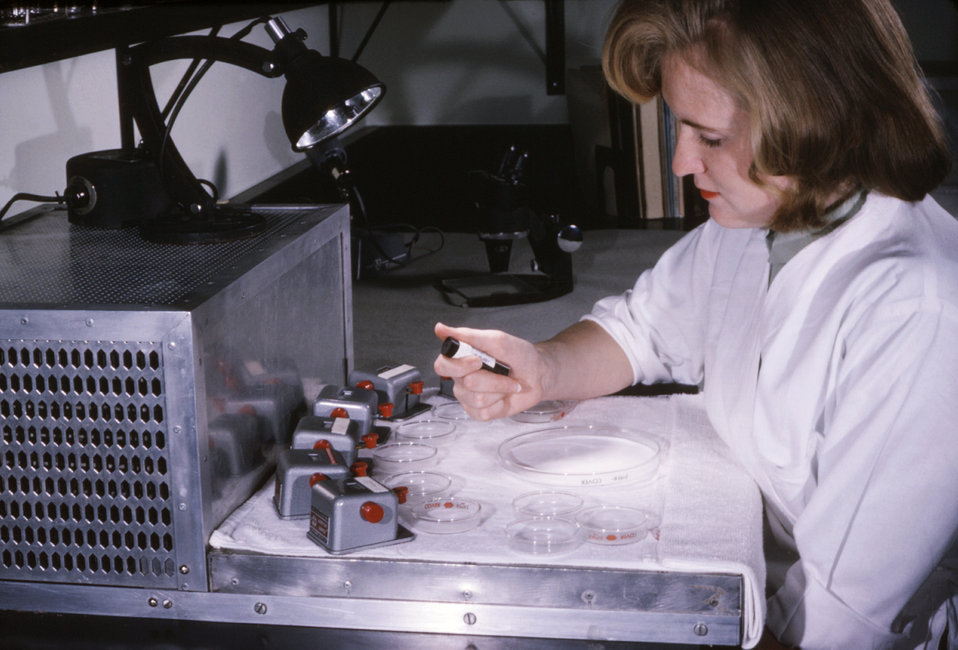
A CDC laboratorian is shown here working with mosquito filled tubes that were used in a virus isolation study.